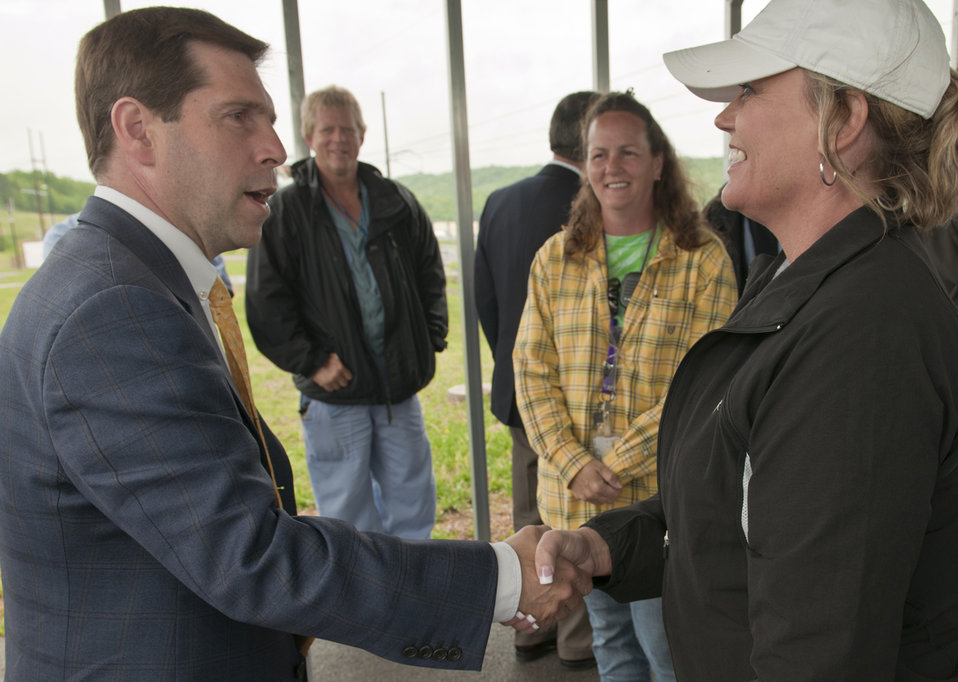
Y-12 Visit

Congressman Chuck Fleischmann (R-Tenn.) greets Rhonda Martin, an employee with B&W Y-12 subcontractor Aerotek Inc., on Chestnut Ridge at the Y-12 National Security Complex on Wednesday, April 20. Martin was among about two dozen people working on Y-12 environmental management projects who met Fleischmann and Department of Energy Assistant Secretary Inés Triay on their visit to Y-12.

In its seven Recovery Act-funded projects, Y-12 has exceeded its goal for small-business procurements, disposed of more than 70,000 cubic meters of waste, created 1,600 jobs and tallied 1.6 million work hours with no lost days.